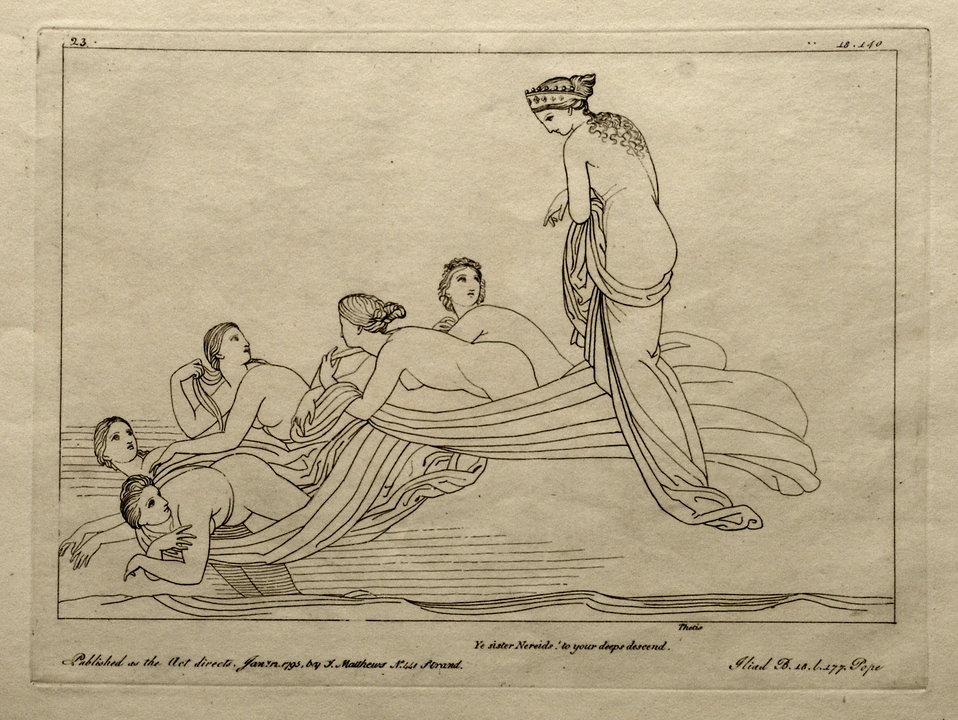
Deutsch: Kupferstich (1795) von Tommaso Piroli (1752 – 1824) nach einer Zeichnung (1793) von John Flaxman (1755 – 1826).